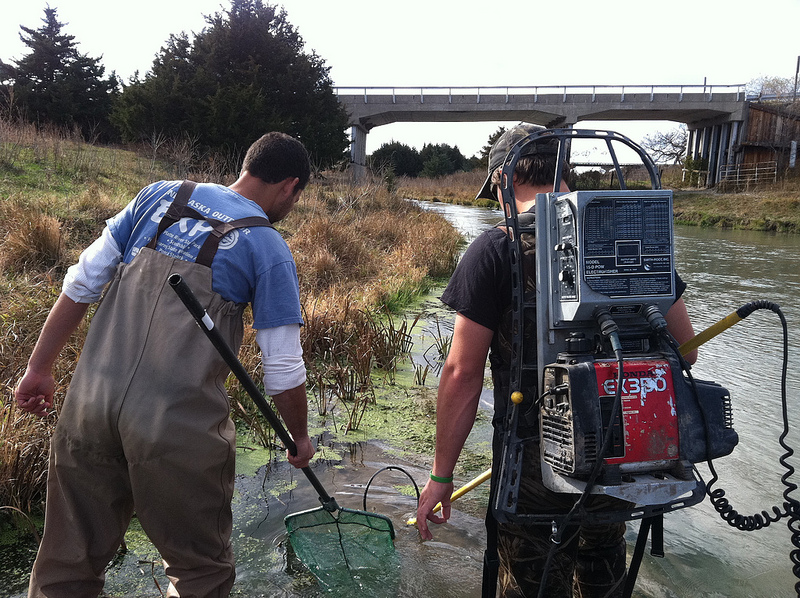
Electroshocking for Plains Topminnow

Surveying for the plains topminnow in the Nebraska Sandhills.

Location: Dismal River near Halsey, Nebraska

Credit: Lindsay Vivian / USFWS

Photo Contest Entry #42